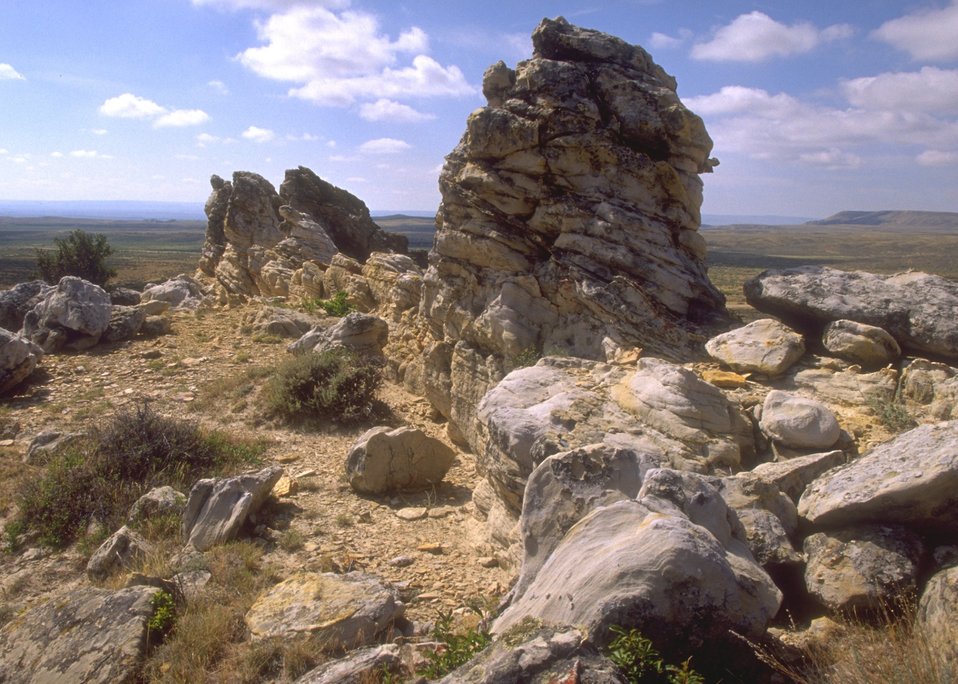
Rock Avenue area along the Oregon Trail, Casper Field Office.